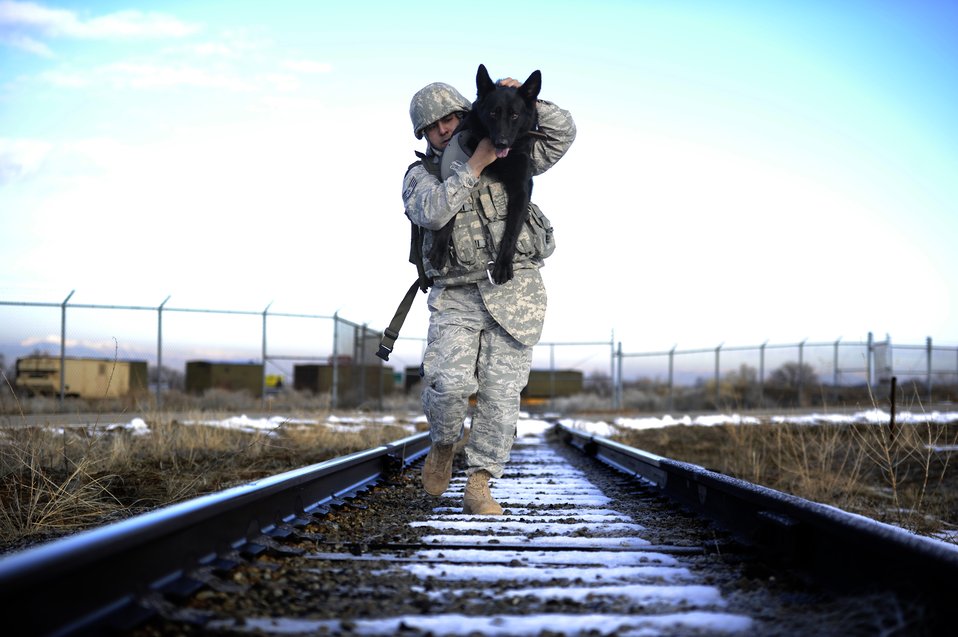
Building loyalty and trust

Staff Sgt. Erick Martinez, a military dog handler, uses an over-the-shoulder carry with Argo II March 4, 2011, during an exercise at Hill Air Force Base, Utah. The exercise helps build trust, loyalty and teamwork for Sergeant Martinez and Argo II, who have been working together for only two months.